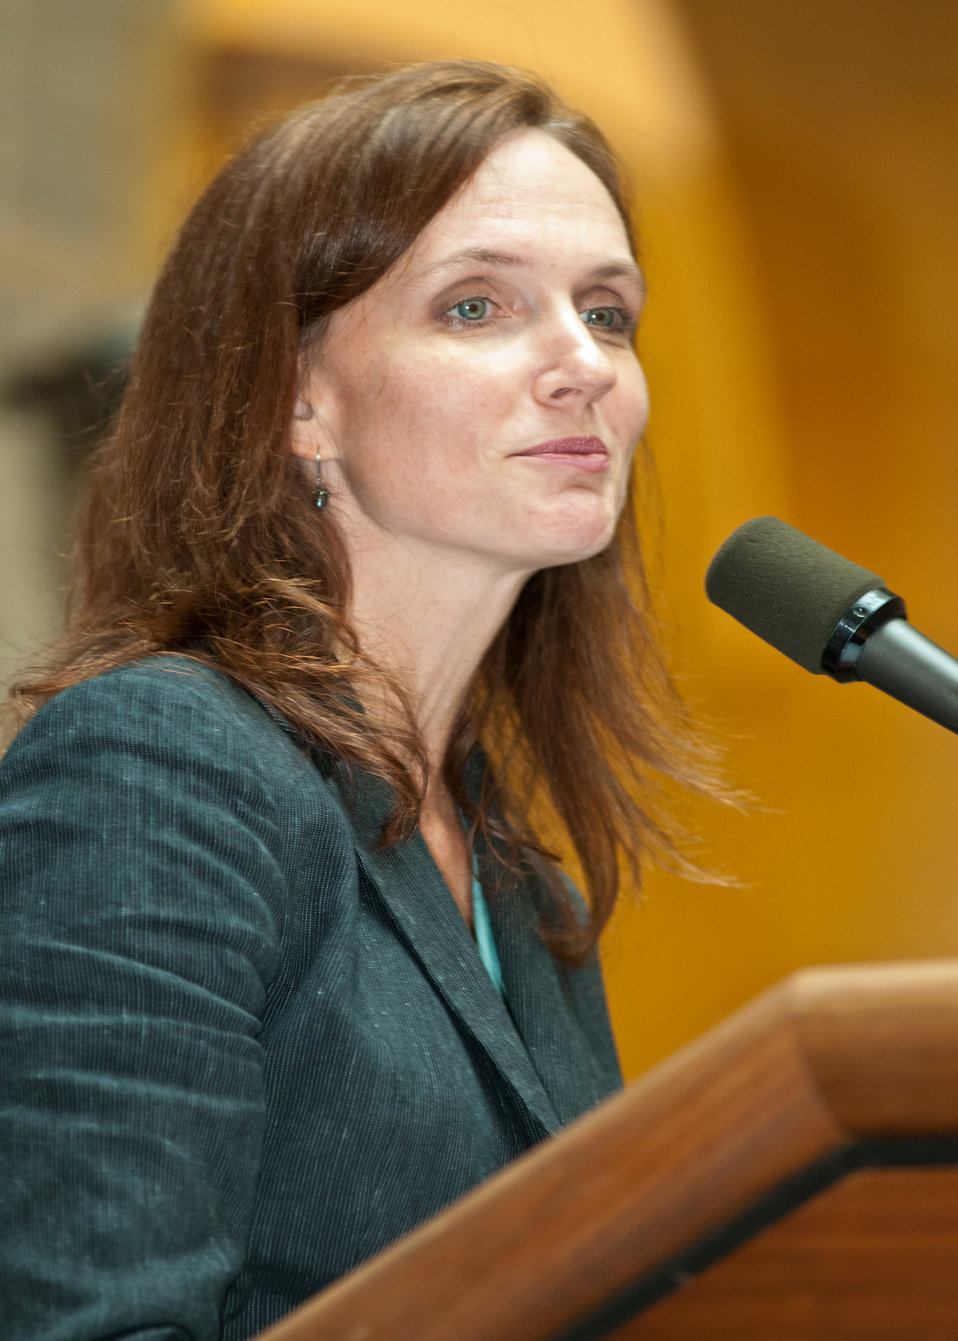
Dr. Elisabeth Hagan, Under Secretary, Food Safety Inspection Service welcomes U.S. Department of Agriculture employees to the kick-off of the USDA 2011 Combined Federal Campaign “Compassion of Individuals, Power of Community” at the USDA in Washington, DC, on Wednesday, September 21, 2011. The theme of the 2011 campaign is “Celebrating 50 Years of Caring, Serving and Giving.”